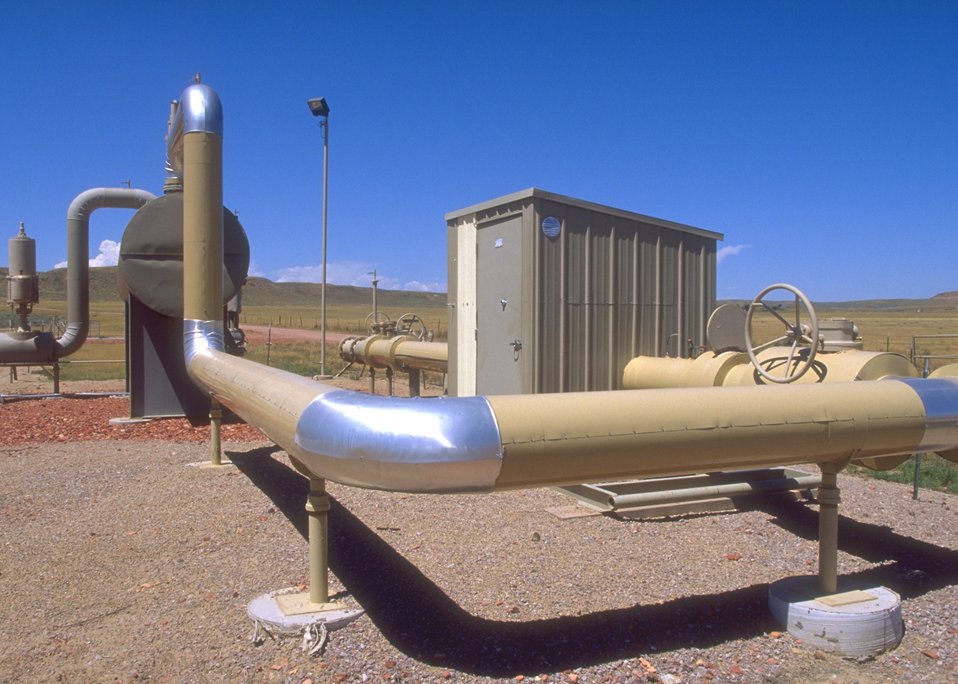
Facilities used in the production of coal bed methane, Buffalo Field Office.